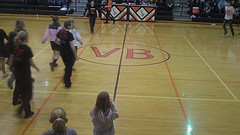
Iowa's SAFE Coalition, NDFW 2013

Van Buren County, IA. SAFE Coalition high school student run groups fighting issues of drug, alcohol, and tobacco abuse during NDFW 2013.